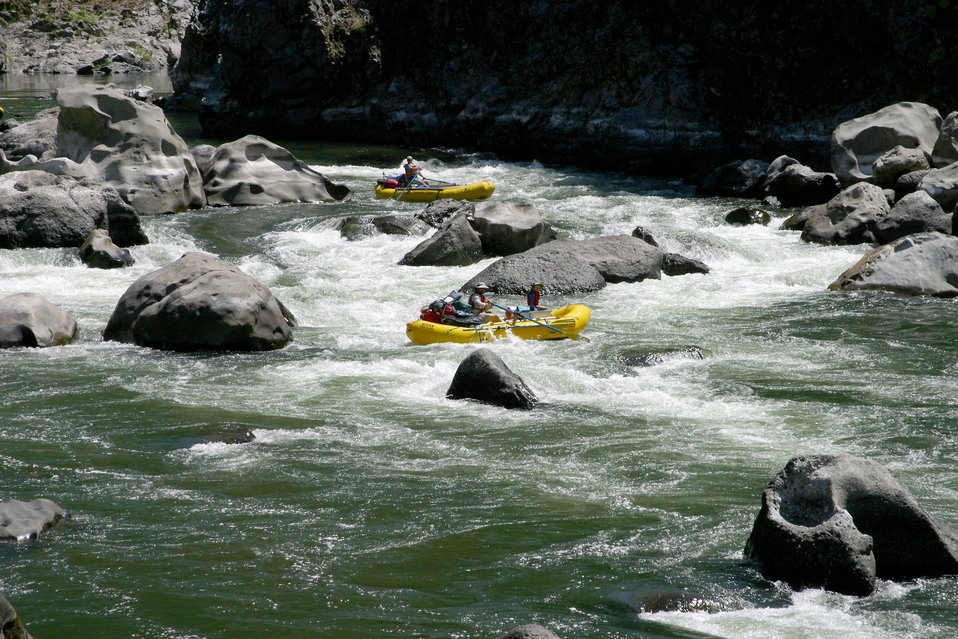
Blossom Rapids.